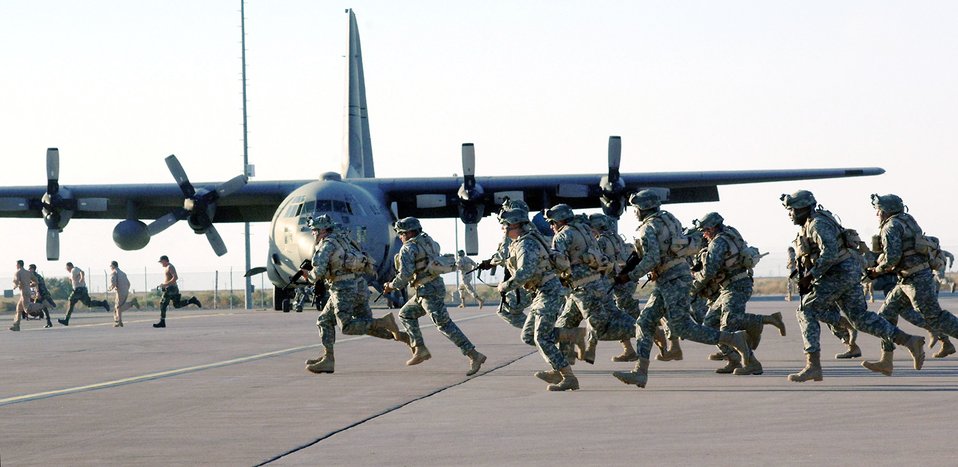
Movie makers team with military for realistic settings

Airmen filling the roles of movie extras run on the set of the movie